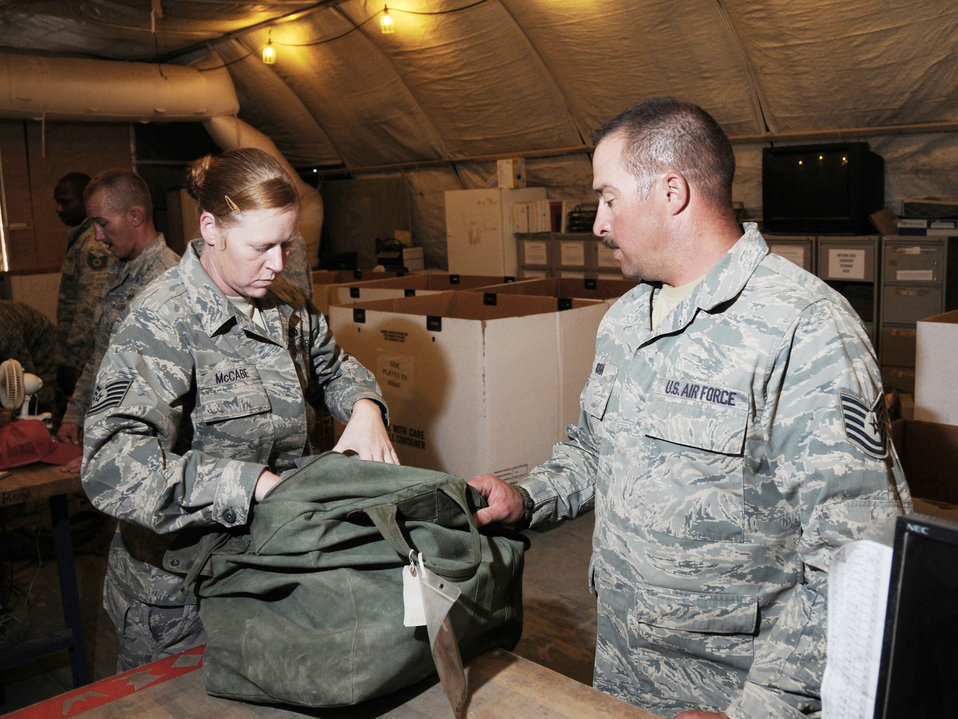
Turning In and Going Home

Tech. Sgt. Tina McCabe, 379th Expeditionary Logistics Readiness Squadron expeditionary theater distribution center turn-in tent receives personal mobility gear from Tech. Sgt. Casey Kuhn, 809th Expeditionary Red Horse Group as he passes through on his way home here, Oct. 1.The ETDC turn-in tent recieves mobility equipment from transient personnel as they re-deploy from forward bases. Sergeant McCabe is deployed from Langley Air Force Base, Va. Sergeant Kuhn is deployed from Malmstrom Air Force Base, Mont. Both are deployed in support of Operations Iraqi and Enduring Freedom.